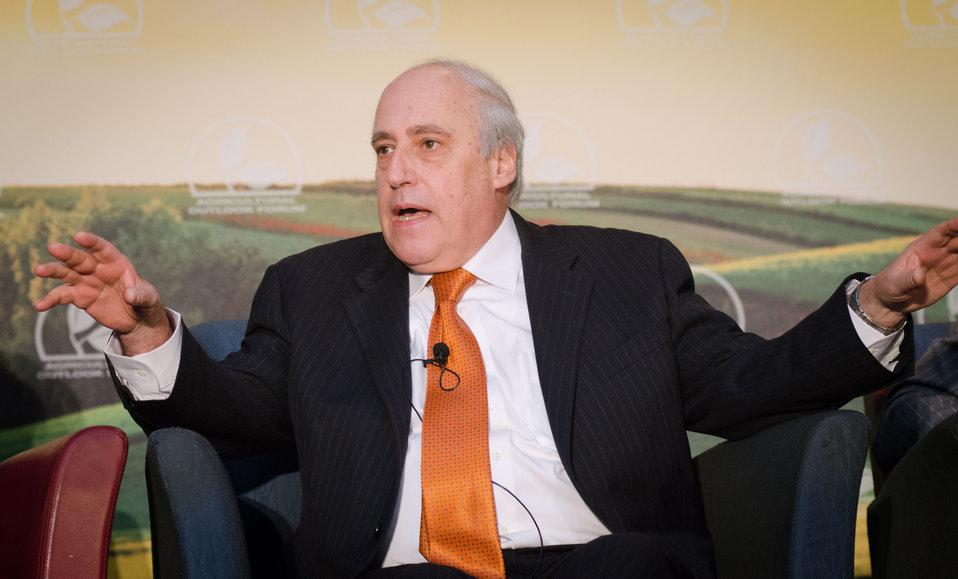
At the 2012 Agricultural Outlook Forum, “Moving Agriculture Forward” in Arlington, VA, on Thursday, February 23, 2012, 7 former Secretaries of Agriculture sat on the plenary panel “Visions of the Future” hosted by current Agriculture Secretary Tom Vilsack. Former Congressman Dan Glickman (KS) speaks out during the panel discussions.